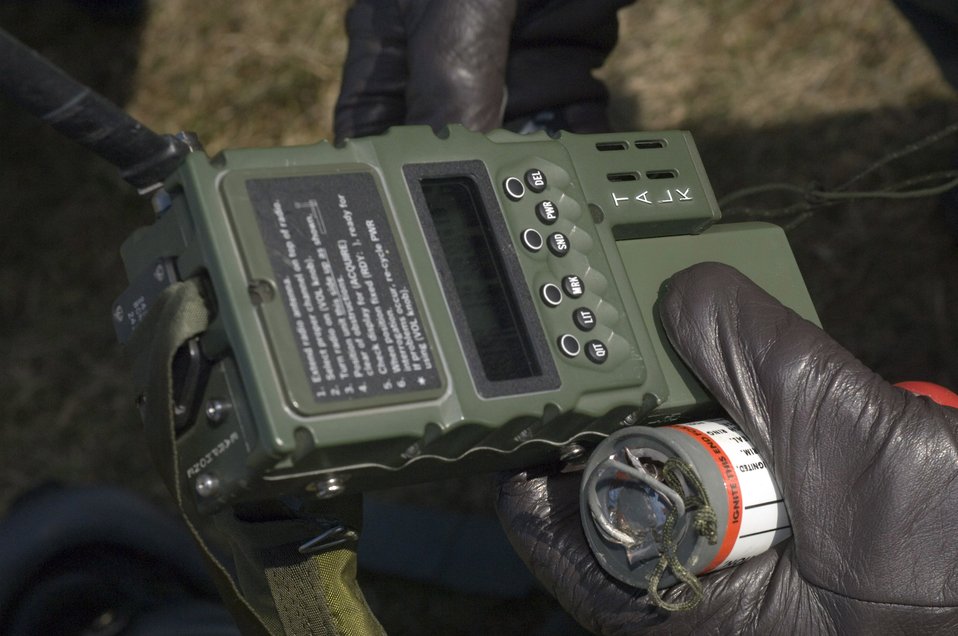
Pilot extraction

Aircrew members are shown how to use radios and signaling devices Monday, March 13, 2006 in Marpingen, Germany. The 81st Fighter Squadron from Spangdahlem Air Base, Germany, and the 56th Rescue Squadron from Naval Air Station, Keflavik, Iceland, are participating in combat search and rescue training here.